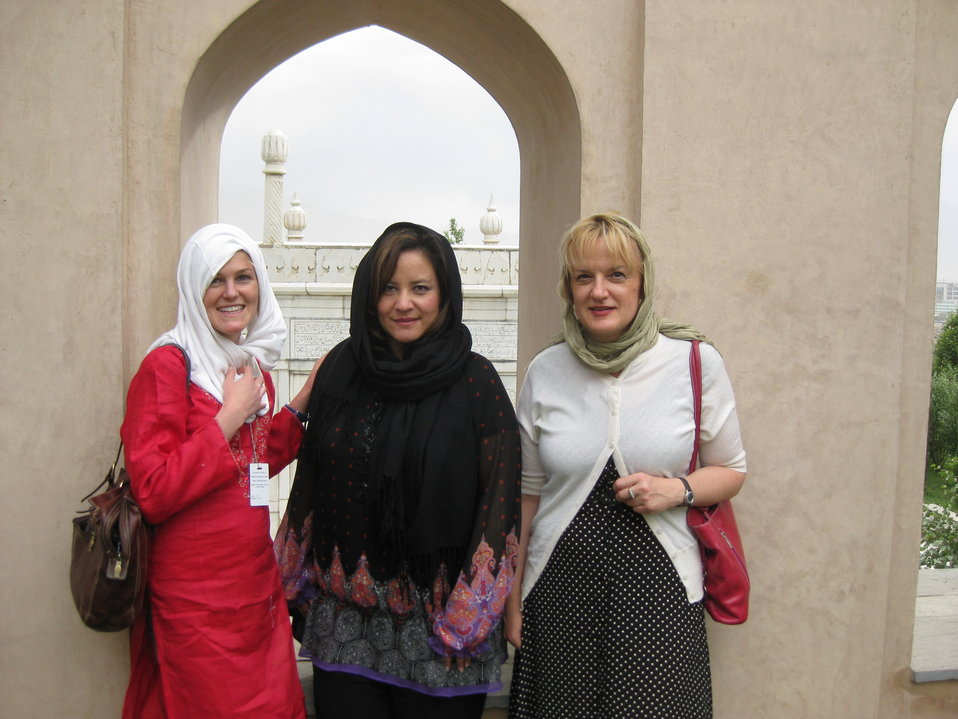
Afghan Youth Voices 099